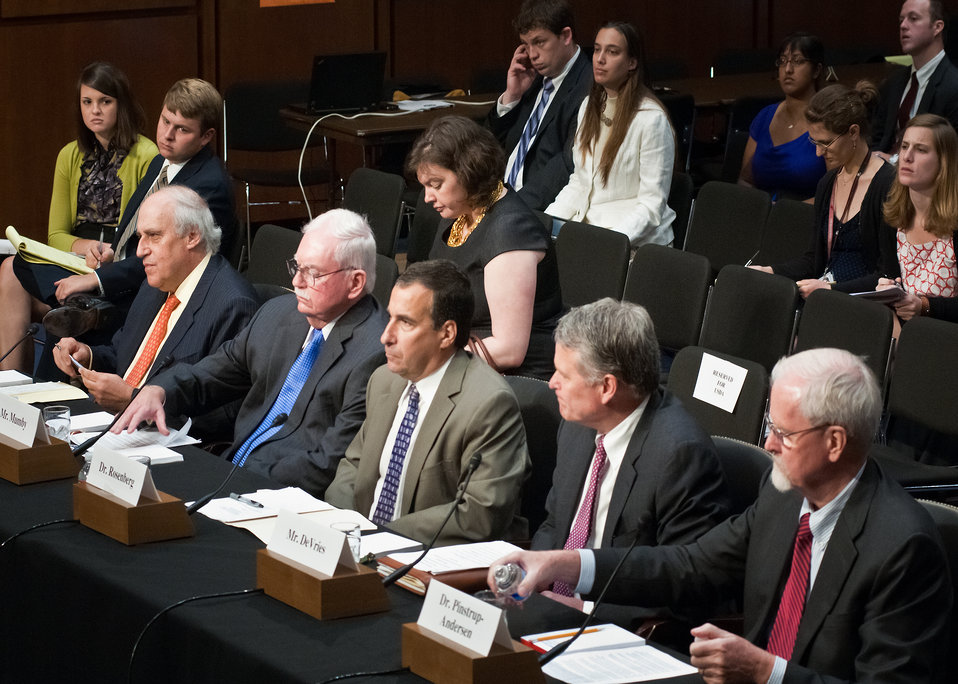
Former Agriculture Secretary Dan Glickman (left), Co-Chair of the Chicago Council’s Global Agricultural Development Initiative and Senior Fellow, Bipartisan Policy Center, Washington, DC, attended a hearing at the Senate Committee on Agriculture, Nutrition and Forestry, Thursday, May 26, 2011 in Washington, DC. Secretary Glickman was a member of the witness panel to speak after Secretary Vilsack. On the panel with Secretary Glickman were from left: Barry Mumby, Senior Member, Wakeshma Farms LLC, Colon, MI, Dr. Andrew Rosenberg, Senior Vice President for Science and Knowledge, Conservation International, Alexandria, VA, Douglas DeVries, Senior Vice President, Global Marketing Services, Agriculture and Turf Division, Deere and Company, Moline, IL and Dr. Per Pinstrup-Andersen, H. E. Babcock Professor of Food, Nutrition and Public Policy, the J. Thomas Clark Professor of Entrepreneurship and Professor of Applied Economics, Cornell University; and Professor of Agricultural Economics, Copenhagen University, Ithaca, NY.